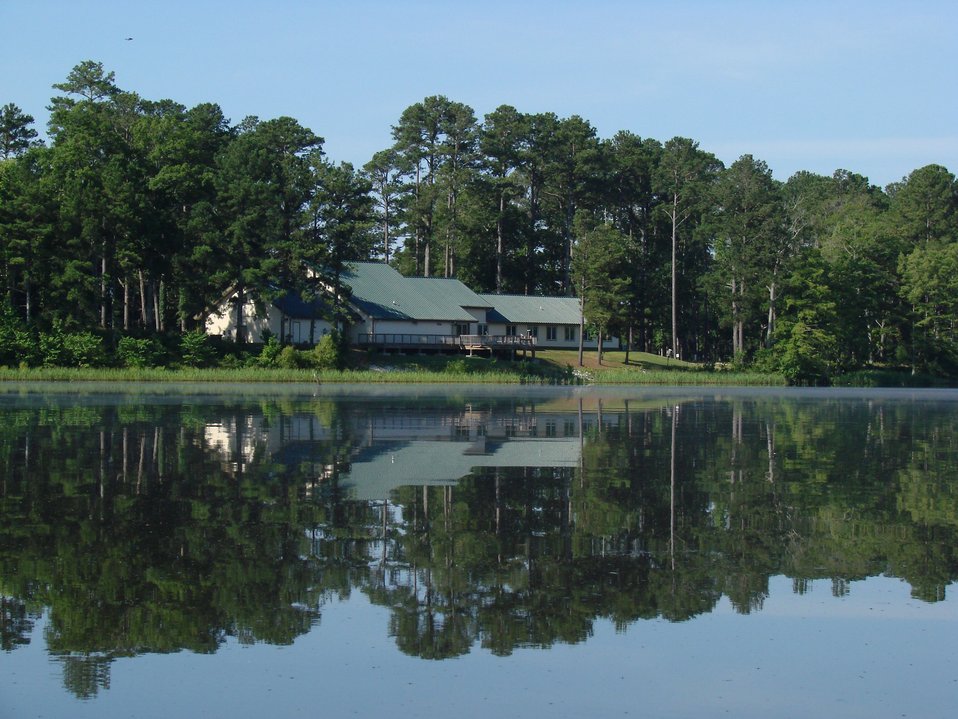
MS Sam D. Hamilton Noxubee visitor ctr